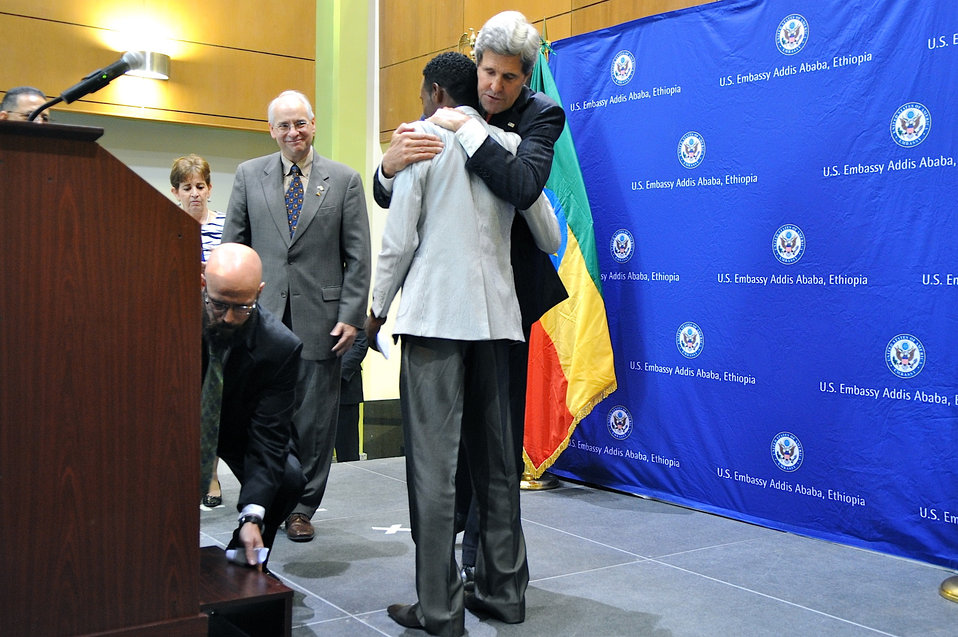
Secretary Kerry Embraces Boston Marathon Winner Lelisa Desisa

U.S. Secretary of State John Kerry hugs Boston Marathon winner Lelisa Desisa after he announced he would give back his medal in a salute to the marathon bombing victims, during a ceremony at the U.S. Embassy in Addis Ababa, Ethiopia, on May 26, 2013.